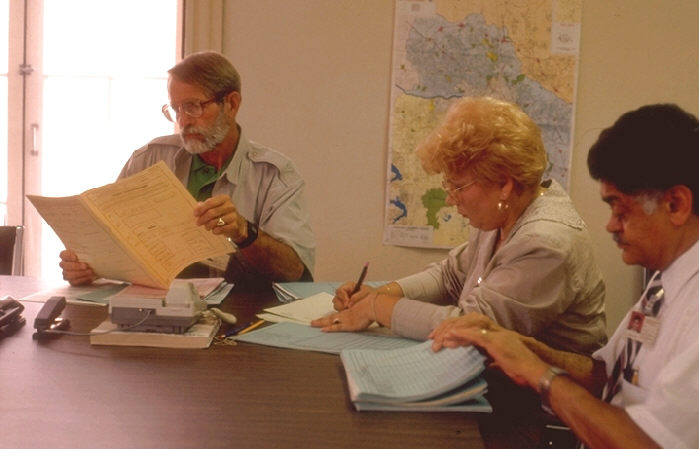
CDC employees compiling data.